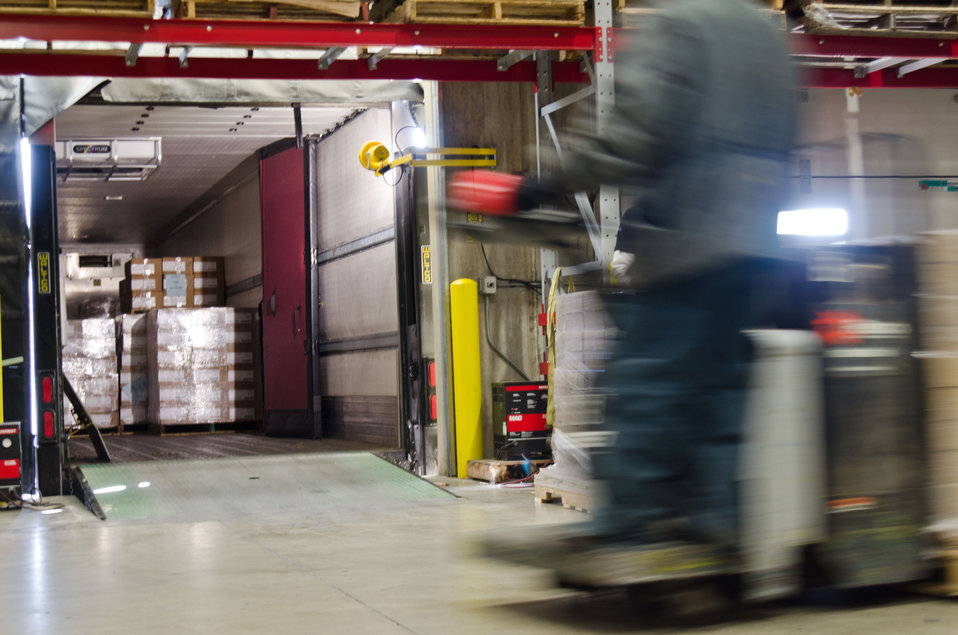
Forklifts and pallet lifters move pallets of canned goods; fruit juices or dry beans that have been provided through the United States Department of Agriculture (USDA) Commodities Supplemental Food Program (CSFP) into the trucks at the San Antonio Food Bank (SAFB) headquarters facility in San Antonio TX, on Monday, October 31, 2011.

SAFB is a non-profit organization that serves as a clearinghouse by receiving and storing truckloads of donated food, produce, and other grocery products in. Their fleet of trucks and tractor trailer rigs support the distribution of '...more than 44 million pounds of food, produce, and grocery products. These products are distributed over 500 human service agencies that help southwest Texans in 16 counties. By partnering with SAFB, these agencies save more than $70 million in food purchase costs. These values represent almost 4.6 million meals per month going to 40,000 poor and hungry families in the San Antonio area,' states SAFB.
“We couldn’t do what we do without our partnership with USDA’” said President and CEO Eric Cooper. He continues, “We are privileged in partnering (with the USDA) to feeding kids, through the summer, with the Summer Food Service Program, and throughout the year, with the Child and Adult Care Feeding Program (CACFP). Then in our approach to feeding seniors, we partner with USDA in the CSFP, and the Senior Farmer’s Market (Nutrition) Program. And then work to bring all our (needy) parties together with our Supplemental Nutrition Assistance Program (SNAP) Outreach. You know, once families have access to food we believe it is important to educate them. Through the support of the SNAP-Education Program we are able to educate them during their time of need. With this comprehensive approach we are really able to get the right food, at the right amount, at the right time, to needy families throughout our community – which allows us to feed the fifty-eight thousand we do, each week.”
SAFB serves 16 counties in Southwest Texas and states, “Nearly one out of every four children and one out of every five adults in Southwest Texas lives in poverty and has difficulty meeting basic nutritional needs.” According to SAFB, sixty-five percent of the people requesting emergency food have children. “Additionally, the senior citizens and those living on a fixed income generally have limited funds for a consistent grocery budget.”
San Antonio is the seventh largest city in the nation with surrounding farms and ranches near its rivers and water supplies. When available they provide fresh surplus produce. Other commodities come from the food industry and manufacturers. The major food brand companies that for various reasons have surplus commodities donate it to SAFB.
The United States Department of Agriculture donates commodities through programs such as The Emergency Food Assistance Program (TEFAP), while Texas farmers supply fresh produce to their Fresh Produce Program.
Public donations come in the form of money, food, volunteer time, and advocacy.